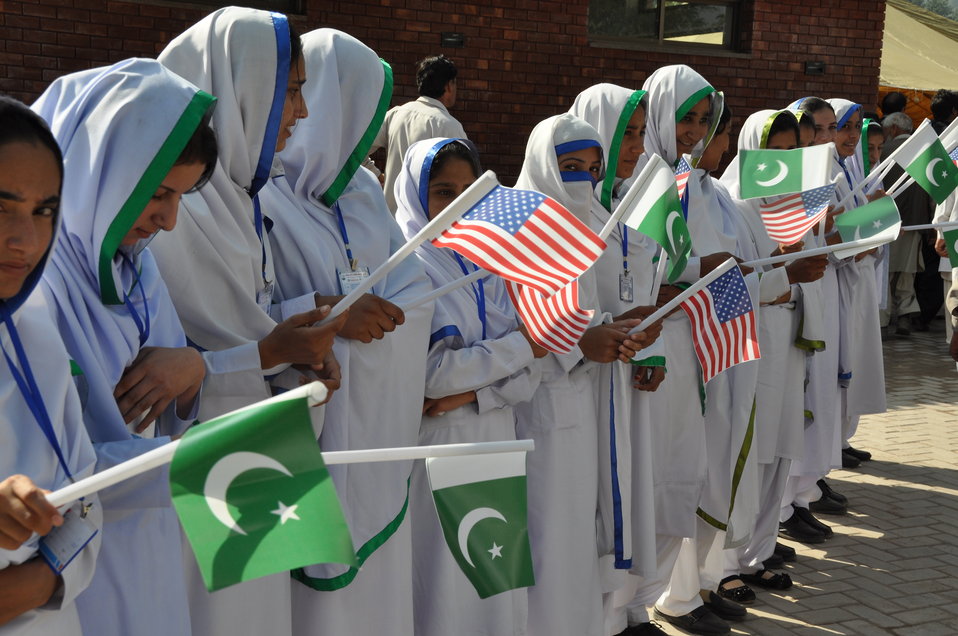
Dhirkot Reconstructed Hospital Inauguration Pakistan Reconstruction Program 20